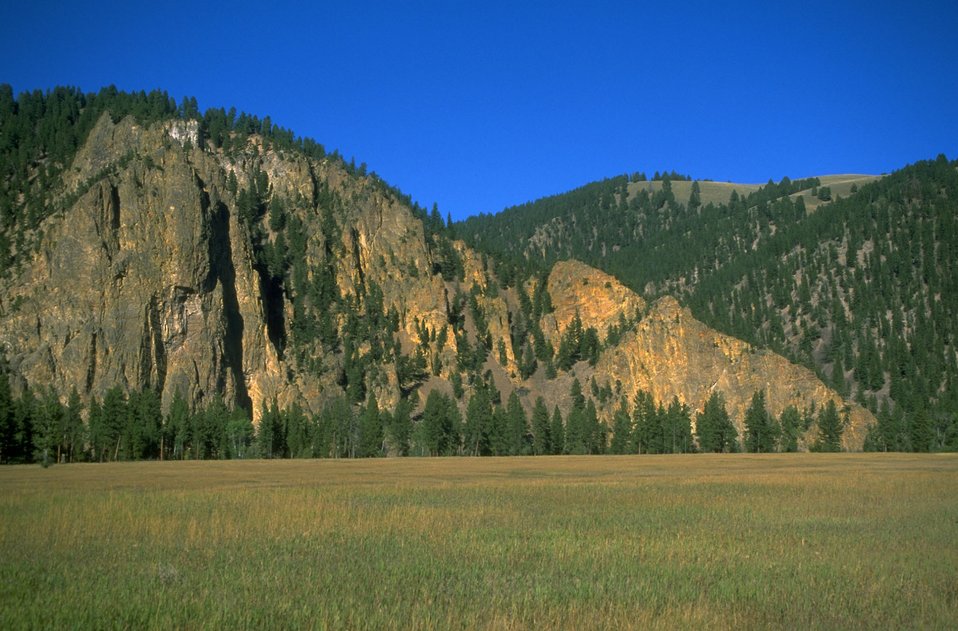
Squaw Rock ACEC (area of critical environmental concern)